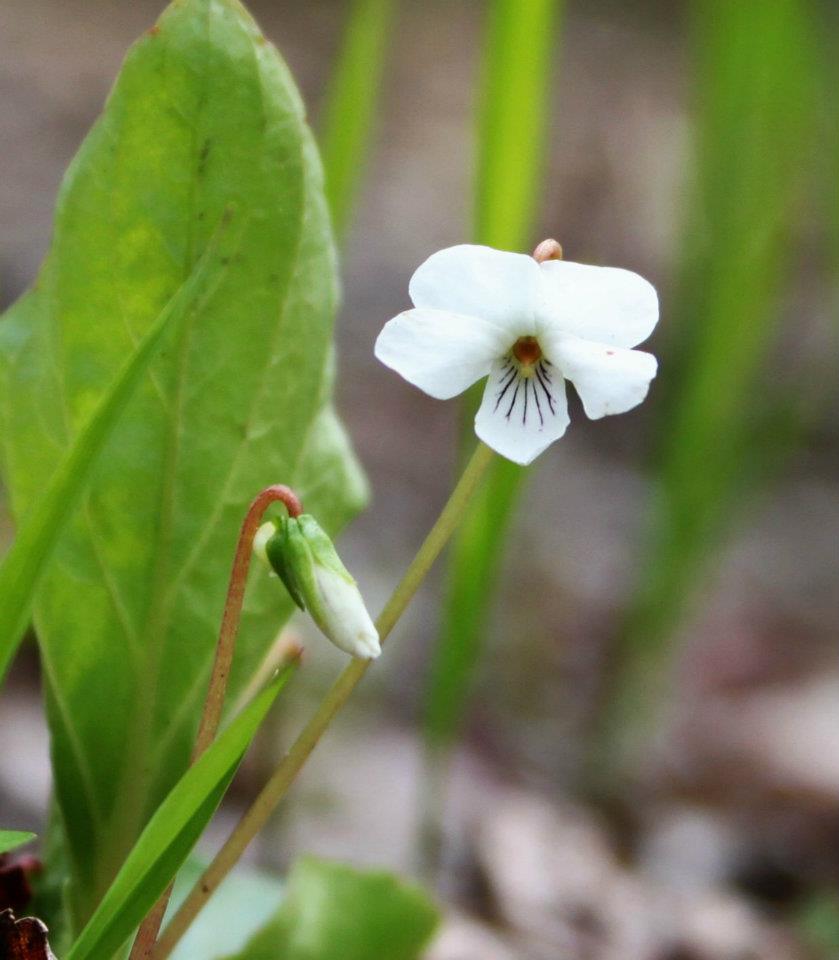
Sweet White Violets

Friends of Cape May National Wildlife Refuge, New Jersey
April 2012
USFWS

Signs of spring on the Refuge/Indian Trail Swamp.